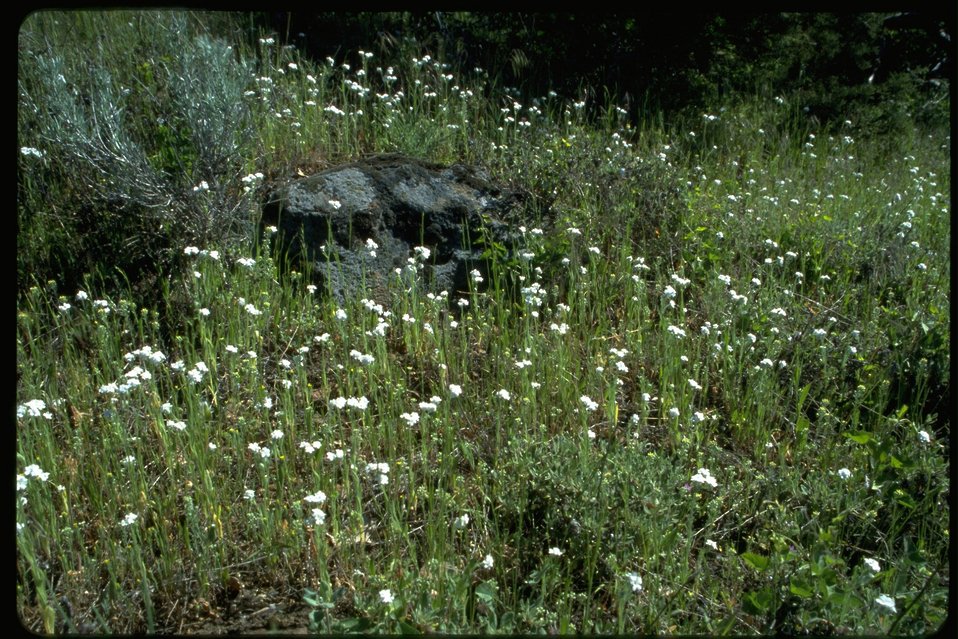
Long shot of Popcorn flower habitat.